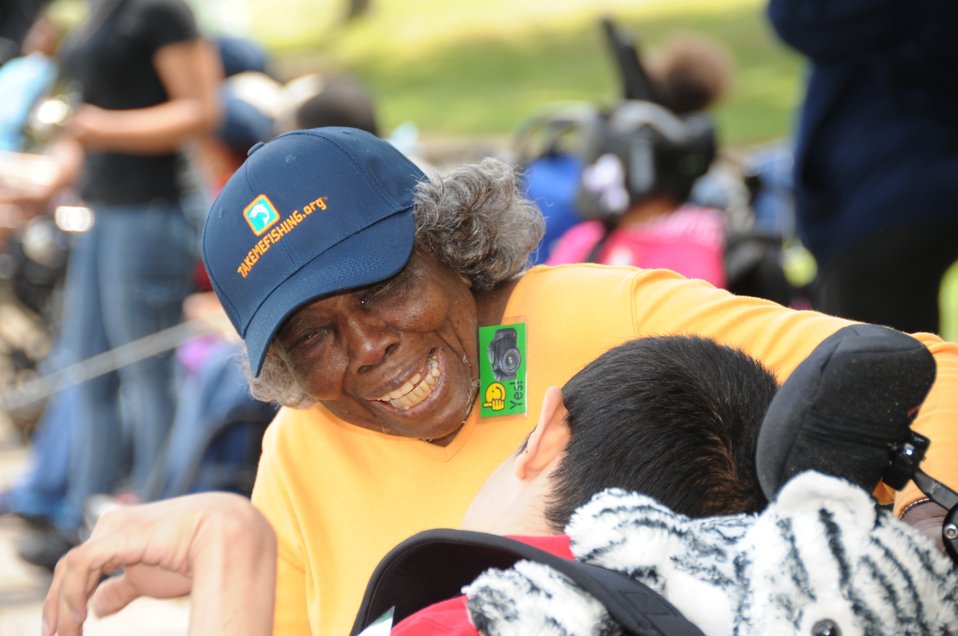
Young at heart

103-year-old Virginia McLaurin stays young at heart by helping special needs children cast their lines.